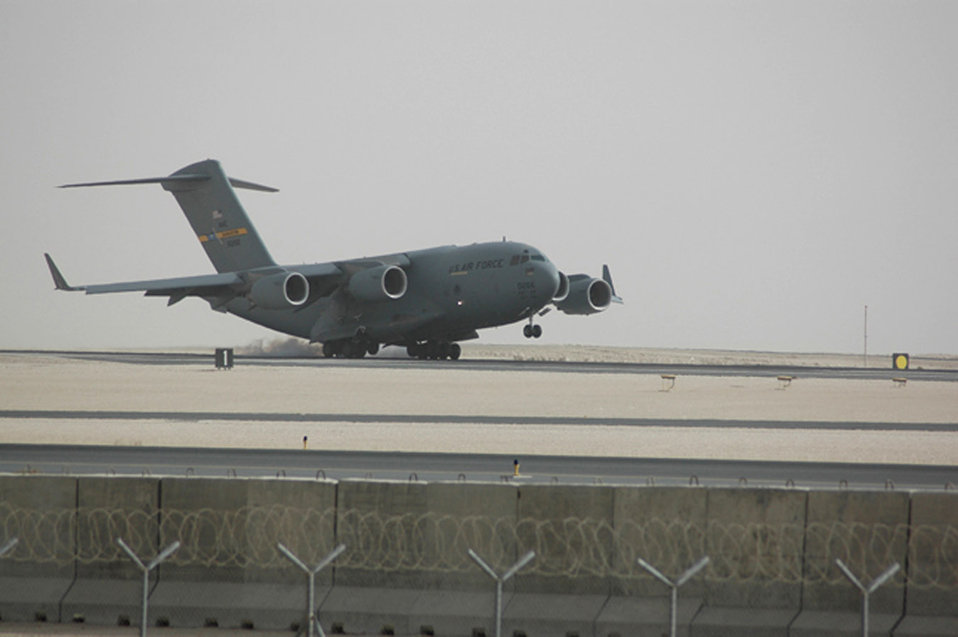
Bagram Airmen recover crippled aircraft

A C-17 Globemaster III lands at a forward deployed location. A similar C-17 touched down Jan. 30 with its landing gear up at Bagram Airfield, Afghanistan. C-17s performs tactical airlift and airdrop missions, transports passengers, delivers troop resupply and all types of cargo throughout Southwest Asia.